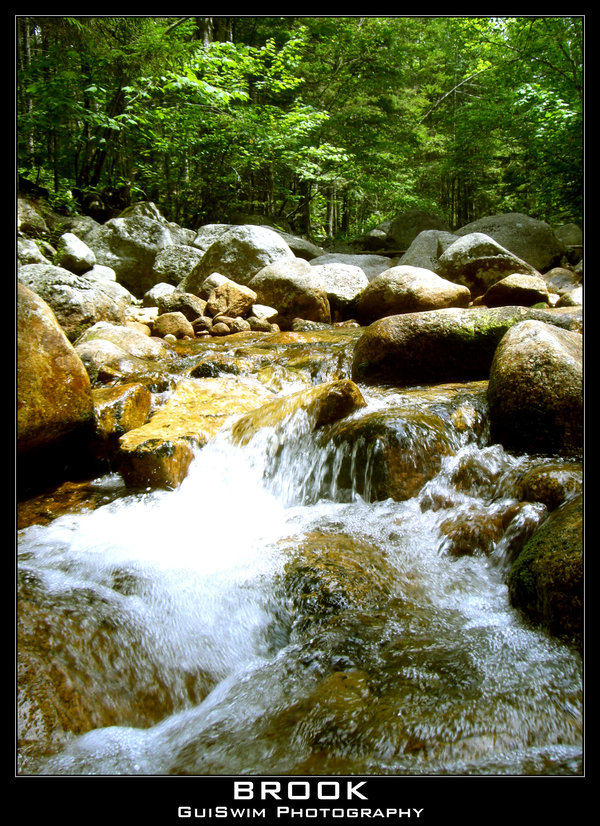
Uploaded by request of Dan Curhan

Taken in the White Mountains in Waterville Valley, New Hampshire.

I had been riding a mountain bike with my mom on a trail through the woods, and I came upon this stream. I was standing on a rock in the middle of the stream, taking the photo, while my mom was yelling at me to get down off the rock because she, like a typical mother, was worried I would fall and injure myself.